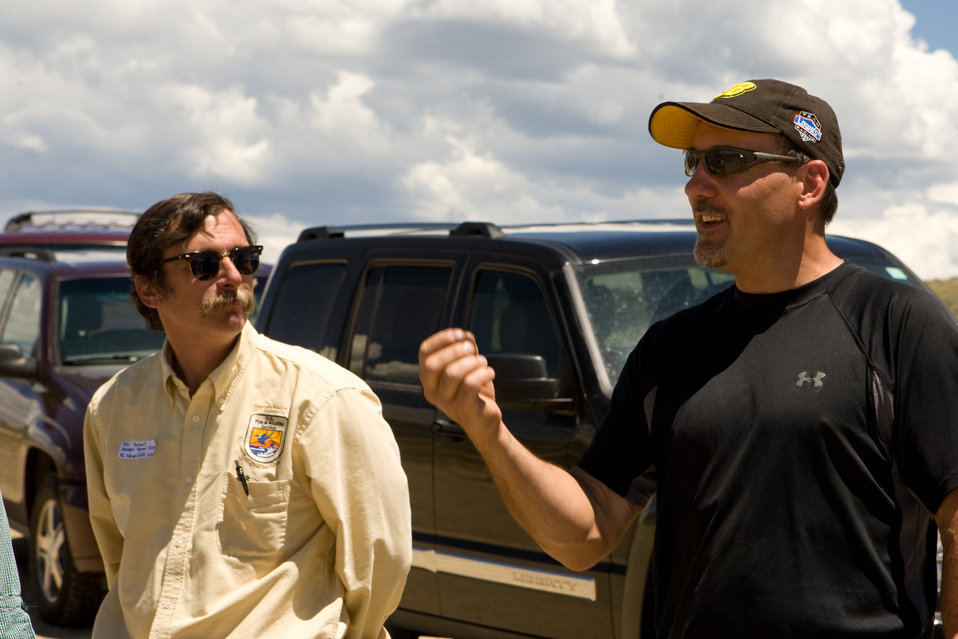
Colorado Rare Plant Conservation Initiative

The Colorado Rare Plant Conservation Initiative (RPCI) is a partnership of 23 statewide and regional agencies, private organizations, and academic institutions working to conserve 121 rare plants in Colorado. As part of these efforts the group developed the Colorado Rare Plant Conservation Strategy, developed Best Management Practices to reduce energy development impacts, addressed climate change, and developed focused strategies for the conservation of individual species at eight priority landscapes. The group has also worked to coordinate volunteer efforts for plant conservation across the state.